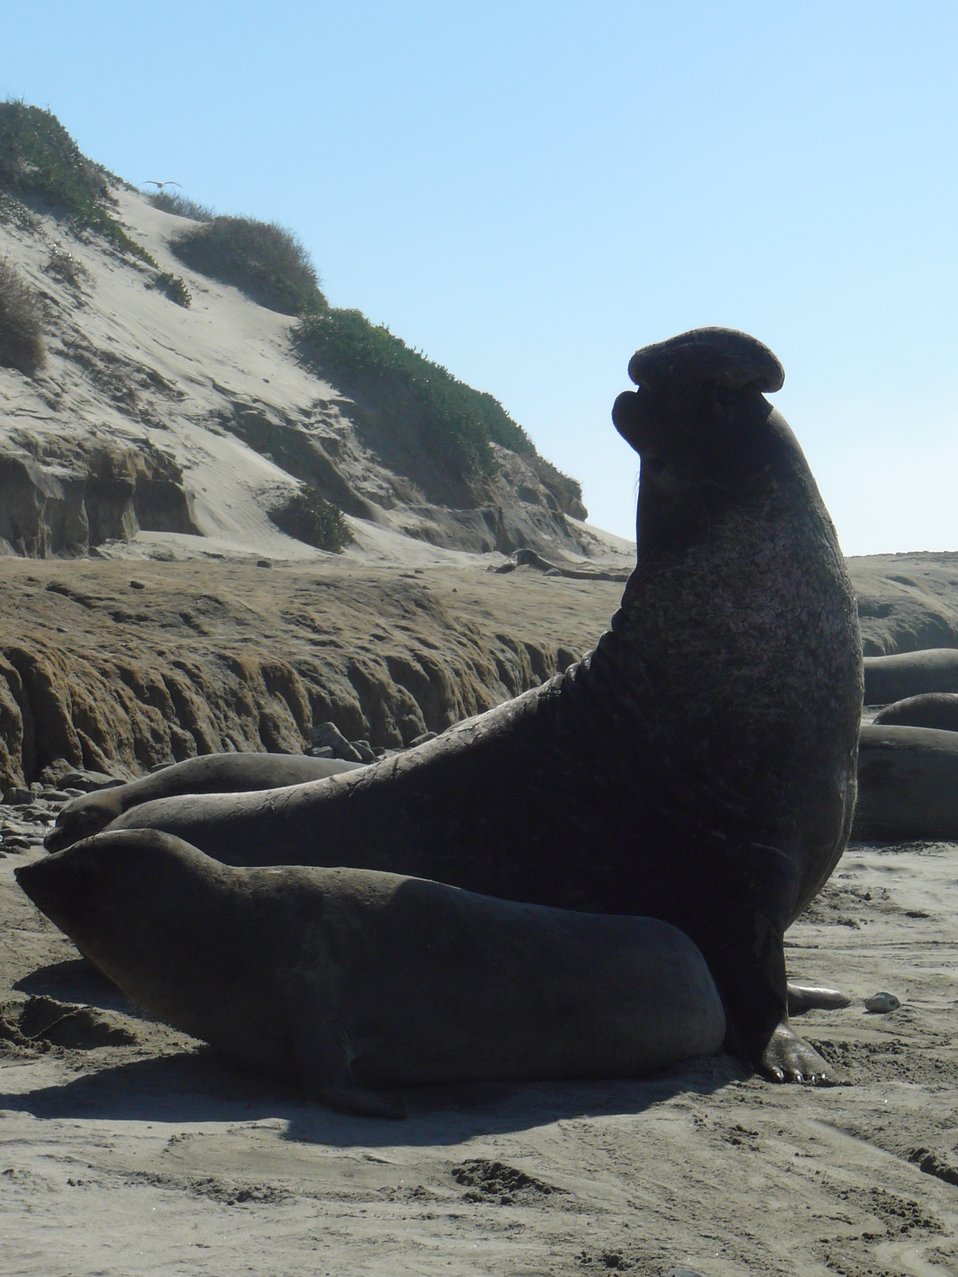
Male elephant seal protecting his territory and harem.